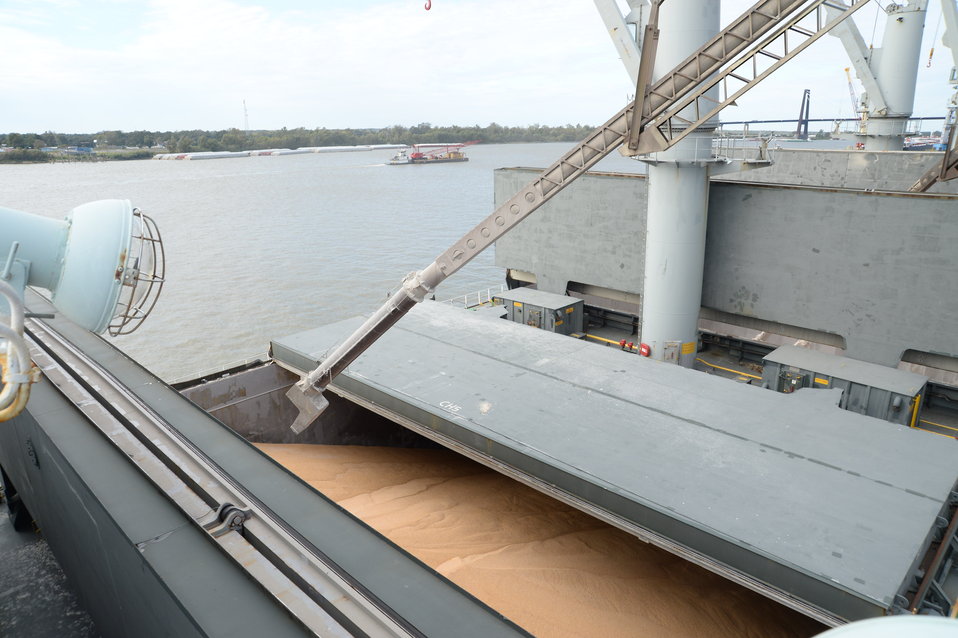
Grain is transferred from barges to to storage facilities near the Port of New Orleans in New Orleans, LA on Tuesday, Nov. 19, 2013.